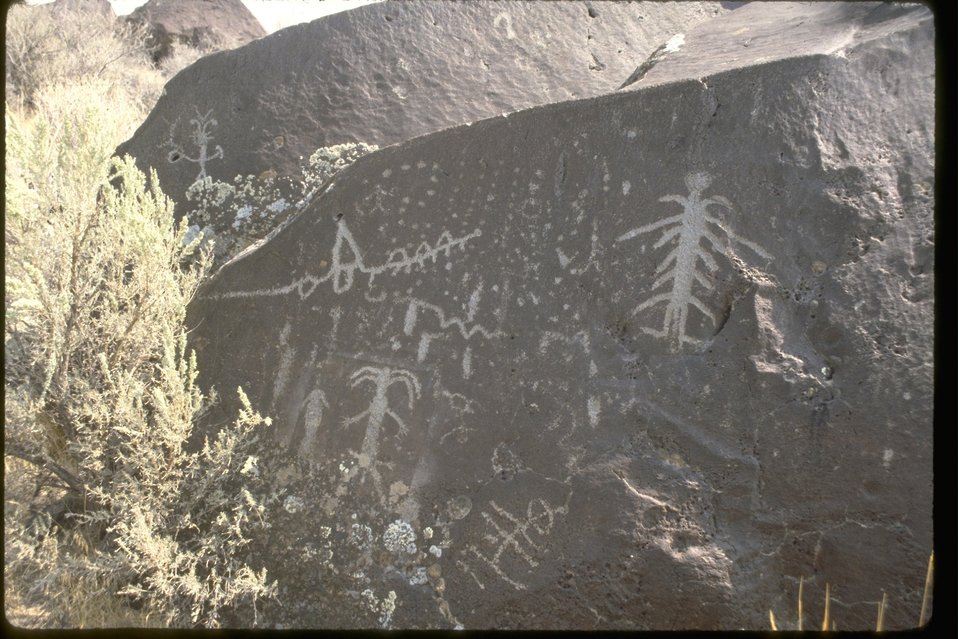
Rock art at Hole in the Ground. OR 3-59